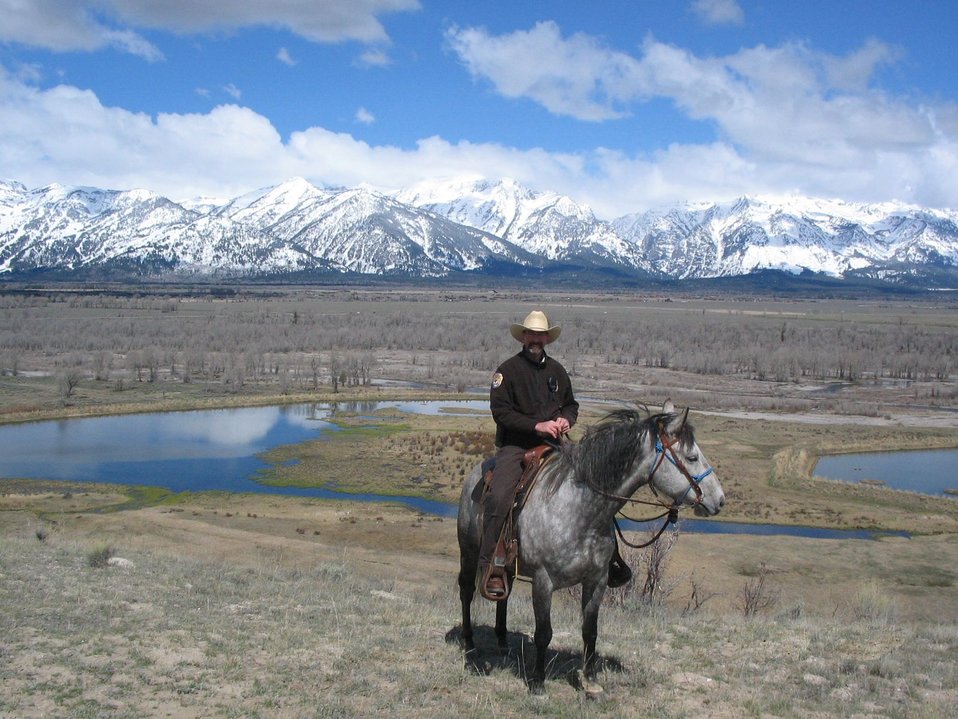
Ray Portwood

National Wildlife Refuge System law enforcement officer Ray Portwood patrols National Elk Refuge in Wyoming on his horse Griz. Portwood is a zone law enforcement officer in the South Columbia Basin, covering parts of Idaho, Oregon and Nevada. His daughter Rachel is a SCEP (Student Career Experience Program) intern at Long Lake Refuge in North Dakota. (USFWS)